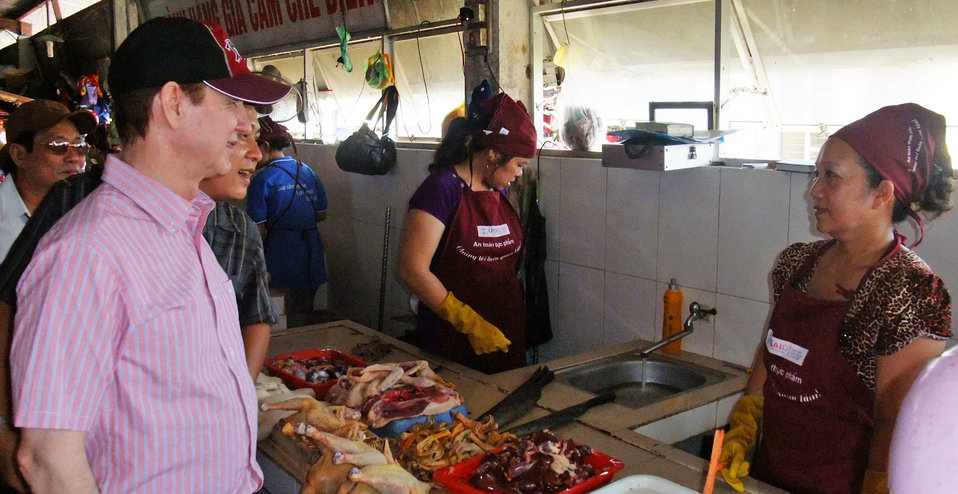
USAID Mission Director Francis Donovan visits Dong Ha Poultry Market